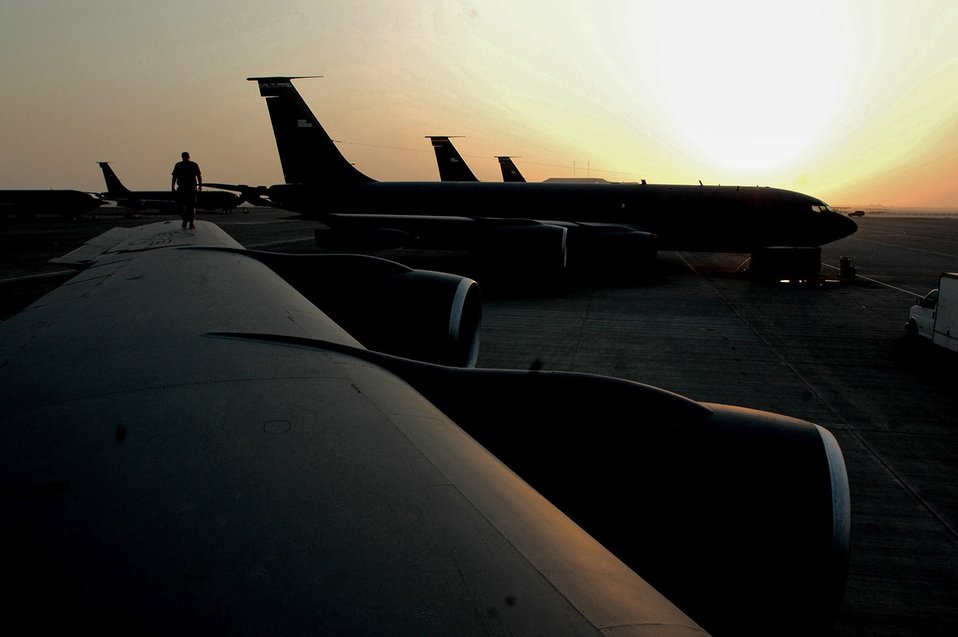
Airpower summary for Aug. 6, 2007

Staff Sgt. Wesley Hughston inspects the wing of a KC-135 Stratotanker parked on the ramp of a deployed location in Southwest Asia. Sergeant Hughston is a crew chief with the 379th Expeditionary Aircraft Maintenance Squadron.